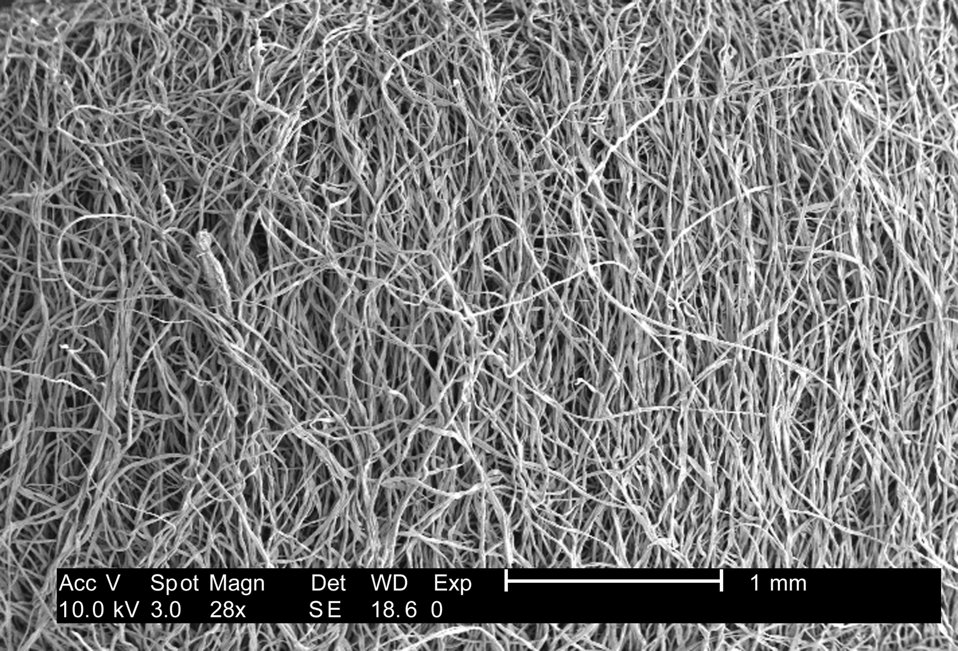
Under a low magnification of 28x, this 2007 scanning electron micrograph (SEM) depicted the fibrous configuration of a plain uninoculated cotton swab. This swab, as well as three other materials, including macrofoam (see PHIL 9736, 9737, 9738), polyester (see PHIL 9735), and rayon (see PHIL 9734) were scanned for a CDC study involving their efficiency in recovery of Bacillus anthracis bacterial spores from steel coupons that had been inoculated with a spore suspension of known concentration. See PHIL 9733, for another view of this material. The article discussing the description of this swab material analysis, and the analytical results was published in 'Emerging Infectious Diseases', Vol. 10, No. 6, June, 2004, and was entitled, Swab Materials and Bacillus anthracis Spore Recovery from Nonporous Surfaces. A link to this article is found below.